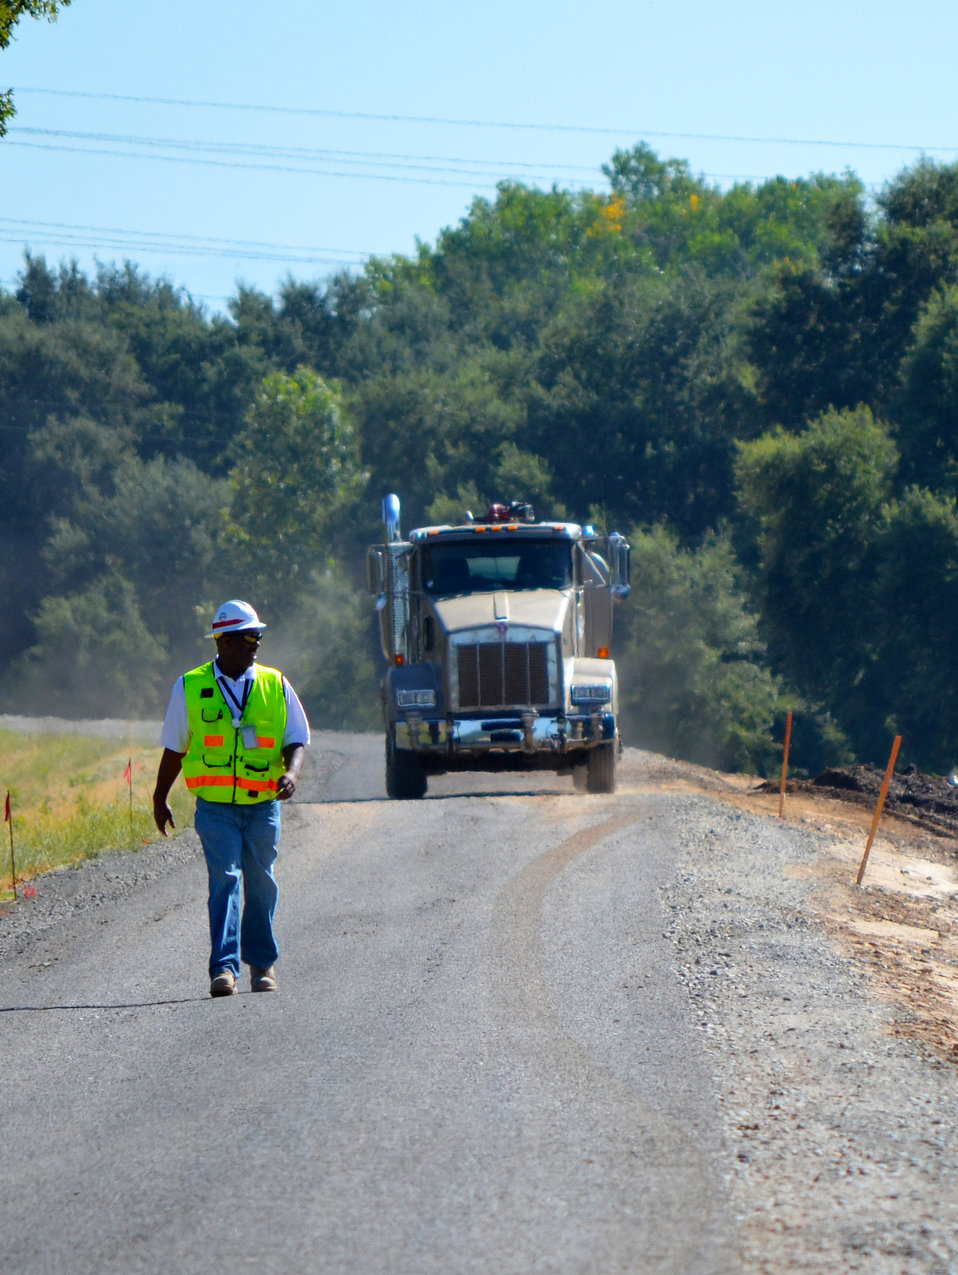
Curtis Morris, Corps safety specialist, inspects ongoing construction

Curtis Morris, a safety specialist with the U.S. Army Corps of Engineers Sacramento District, inspects ongoing construction at the Howe Avenue levee raise project along the American River in Sacramento, Calif., Aug. 28, 2012. Morris and contractors maintain constant safety standards at the project site, which is entirely surrounded by fencing and closed to the public. After scheduled completion this October, the project will further reduce flood risk by raising and reinforcing more than 4,000 feet of levee along the American River in Sacramento, Calif.